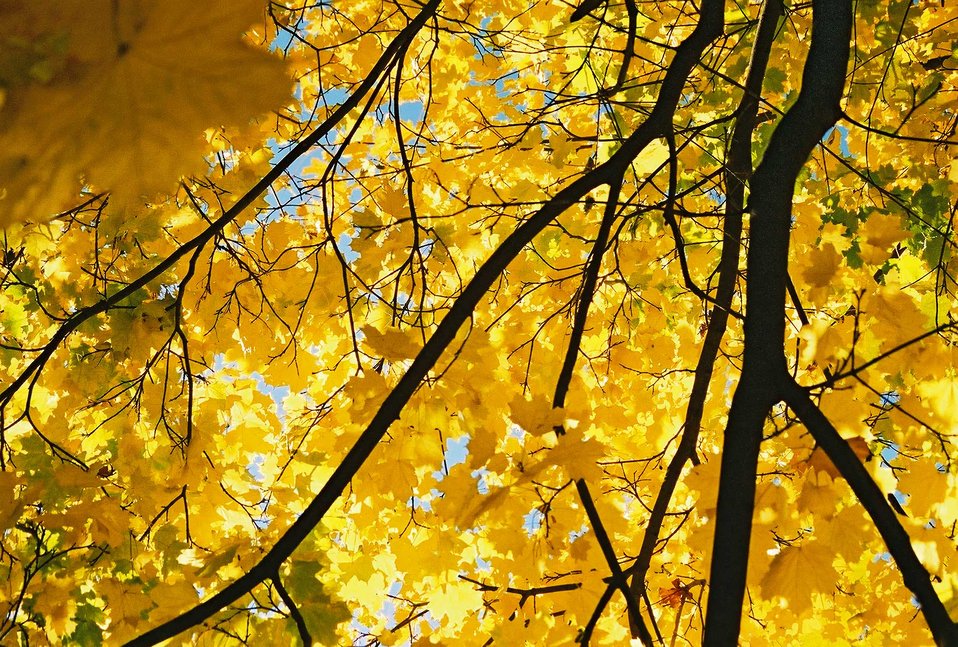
en:Yellow en:leaves of Acer platanoides in en:autumn. Photo by en:User:Pk2000.
en:Category:Free use images